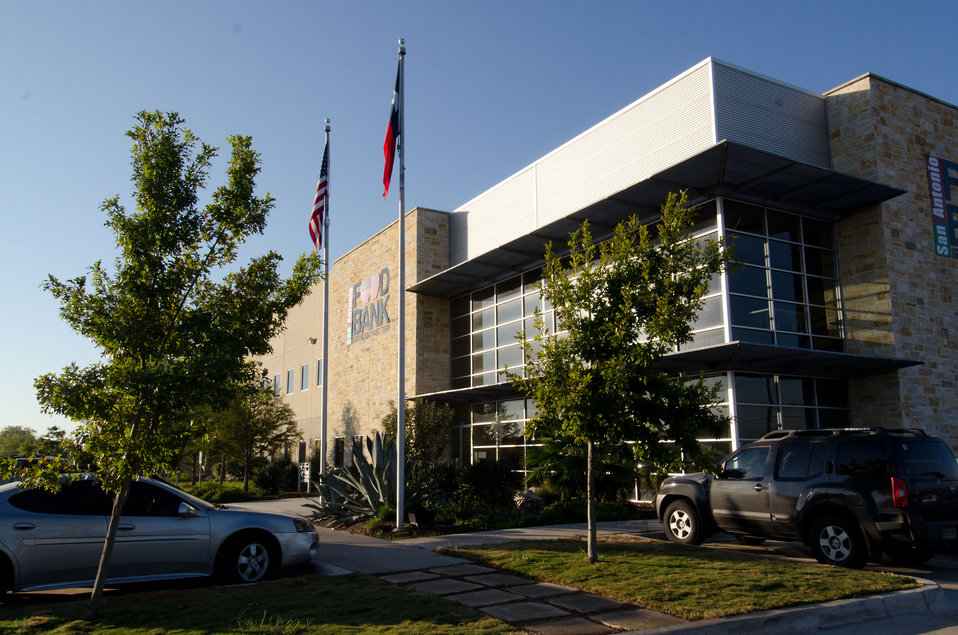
The San Antonio Food Bank (SAFB) is a non-profit organization that serves as a clearinghouse by receiving and storing truckloads of donated food, produce, and other grocery products in San Antonio TX, on Monday, October 31, 2011. SAFB distributes these items to over 500 service agencies that help people in need.
“We couldn’t do what we do without our partnership with USDA’” said President and CEO Eric Cooper. He continues, “We are privileged in partnering (with the USDA) to feeding kids, through the summer, with the Summer Food Service Program, and throughout the year, with the Child and Adult Care Feeding Program (CACFP). Then in our approach to feeding seniors, we partner with USDA in the Commodities Supplemental Food Program (CSFP), and the Senior Farmer’s Market (Nutrition) Program. And then work to bring all our (needy) parties together with our Supplemental Nutrition Assistance Program (SNAP) Outreach. You know, once families have access to food we believe it is important to educate them. Through the support of the SNAP-Education Program we are able to educate them during their time of need. With this comprehensive approach we are really able to get the right food, at the right amount, at the right time, to needy families throughout our community – which allows us to feed the fifty-eight thousand we do, each week.”
SAFB serves 16 counties in Southwest Texas and states, “Nearly one out of every four children and one out of every five adults in Southwest Texas lives in poverty and has difficulty meeting basic nutritional needs.” According to SAFB, sixty-five percent of the people requesting emergency food have children. “Additionally, the senior citizens and those living on a fixed income generally have limited funds for a consistent grocery budget.”
San Antonio is the seventh largest city in the nation with surrounding farms and ranches near its rivers and water supplies. When available they provide fresh surplus produce. Other commodities come from the food industry and manufacturers. The major food brand companies that for various reasons have surplus commodities donate it to SAFB.
The United States Department of Agriculture donates commodities through programs such as The Emergency Food Assistance Program (TEFAP), while Texas farmers supply fresh produce to their Fresh Produce Program.
Public donations come in the form of money, food, volunteer time, and advocacy. Their fleet of trucks to pickup and deliver food as needed.